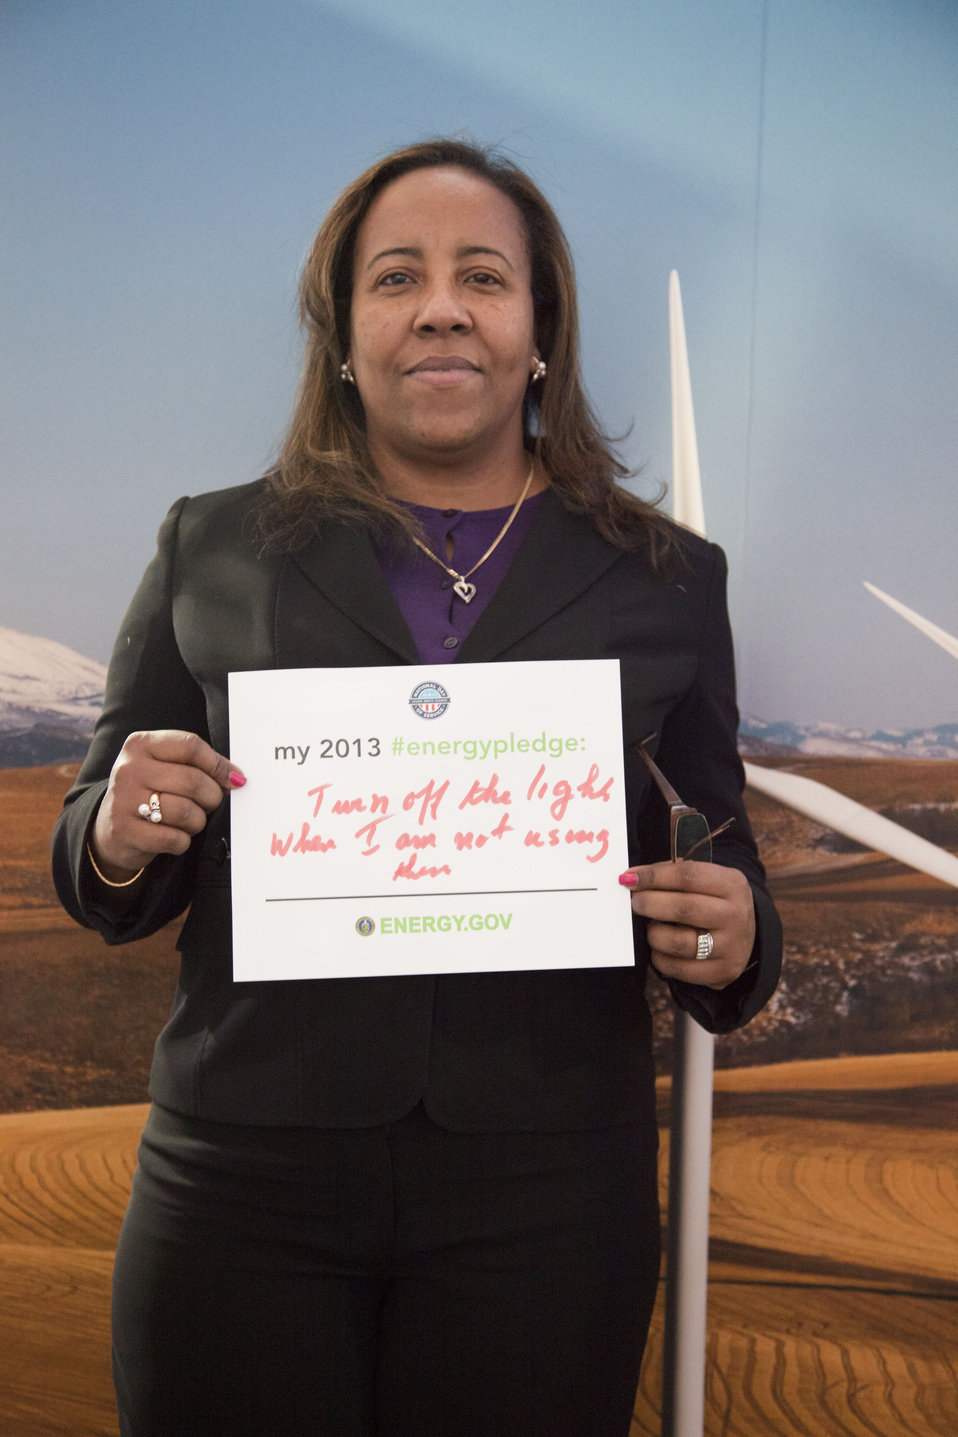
What's your #energypledge?